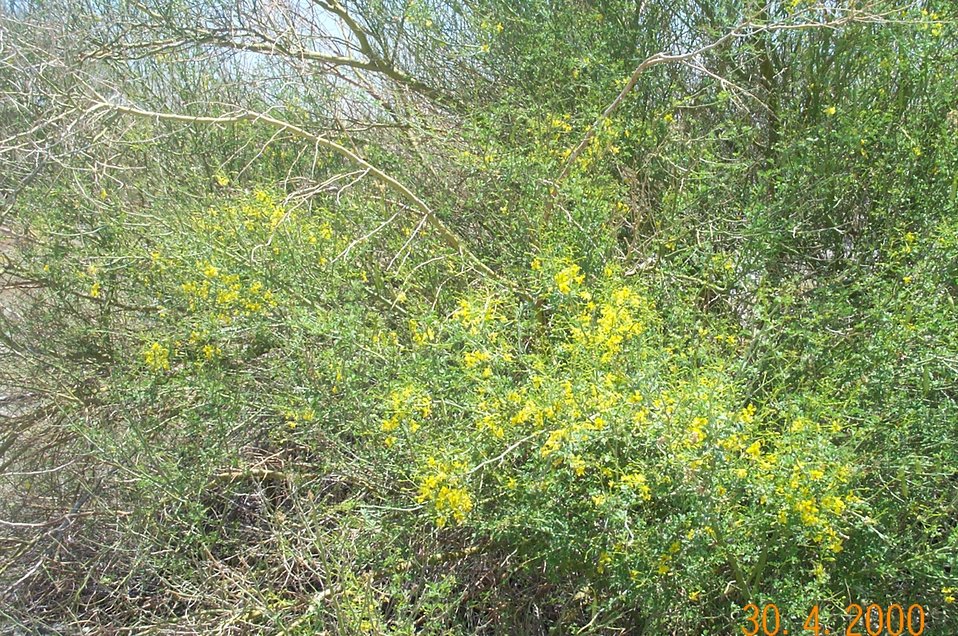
Desert vegetation (palo verde in bloom)